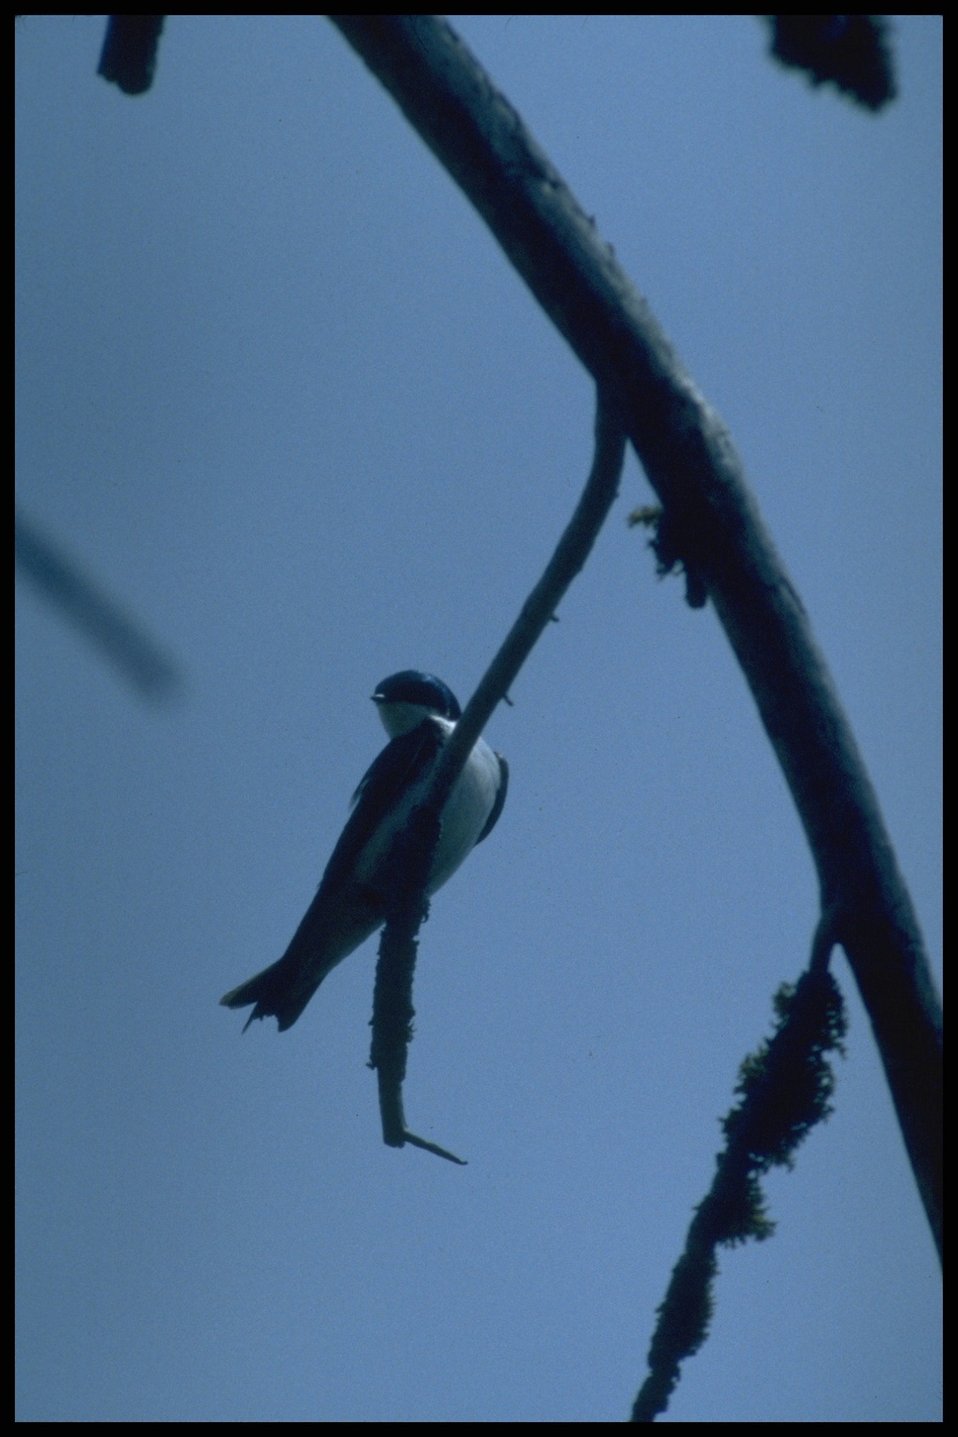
Farshot of Tree Swallow, Lakeview District.